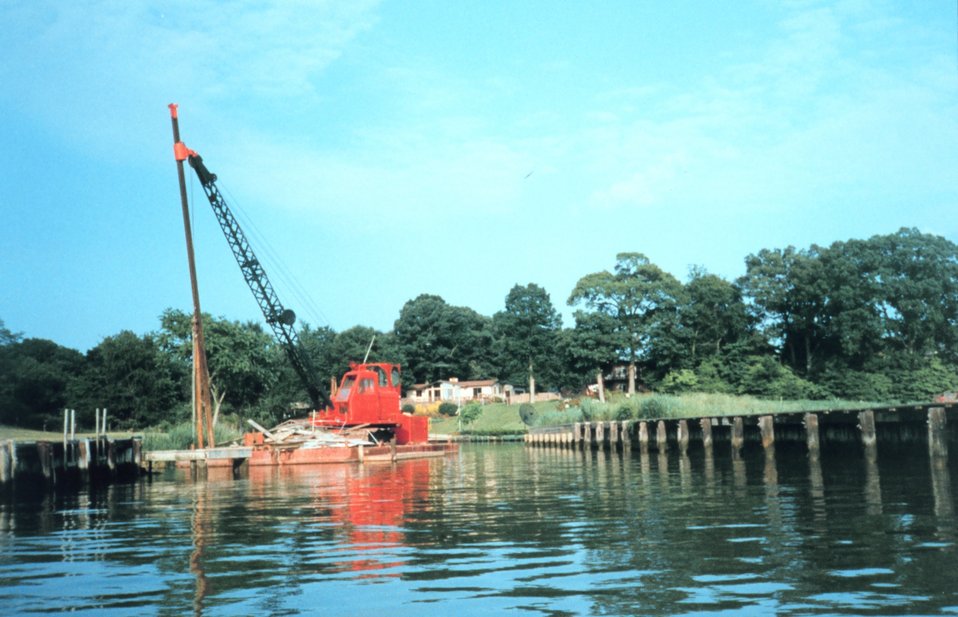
Further loss of natural shoreline occurs as new boat ramps are constructed